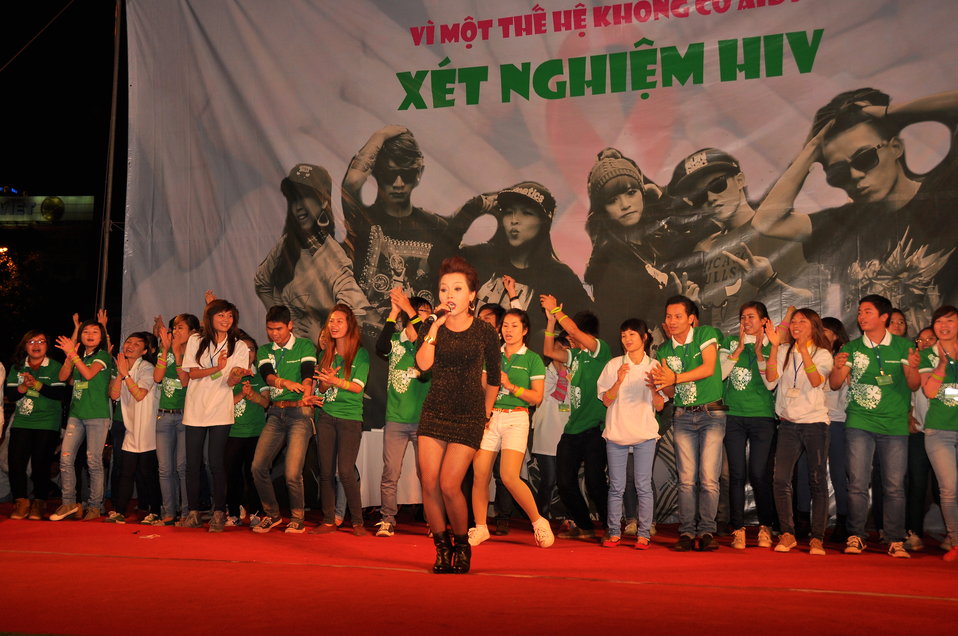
USAID and PEPFAR supports an outdoor concert to promote Vietnam's national action month for HIV

Hanoi, December 18, 2012.